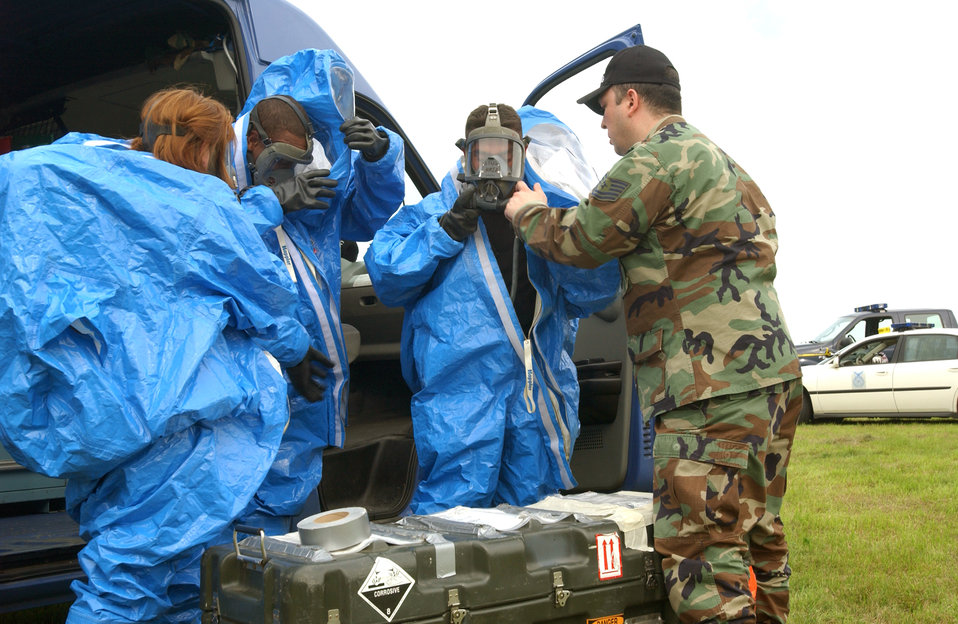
Officials provide update on F-16 crash

Crash and recovery Airmen from the 52nd Fighter Wing at Spangdahlem Air Base, Germany, suit up before begining assessment of an F-16 Fighting Falcon crash site. The F-16 crashed near the town of Oberkail. The pilot safely ejected from the aircraft.